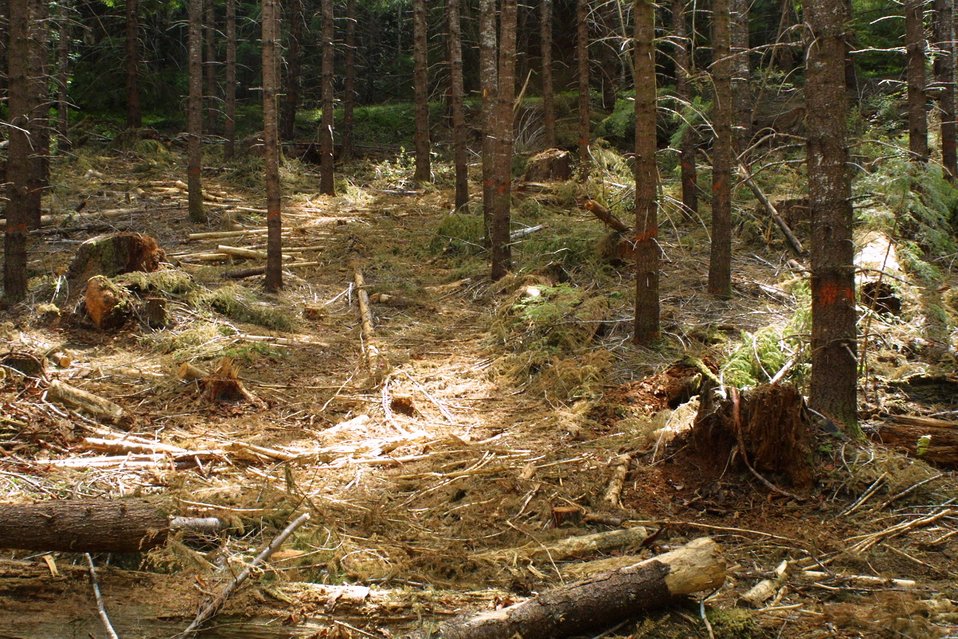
Camas East Timber Sale in Late Successional Reserve.